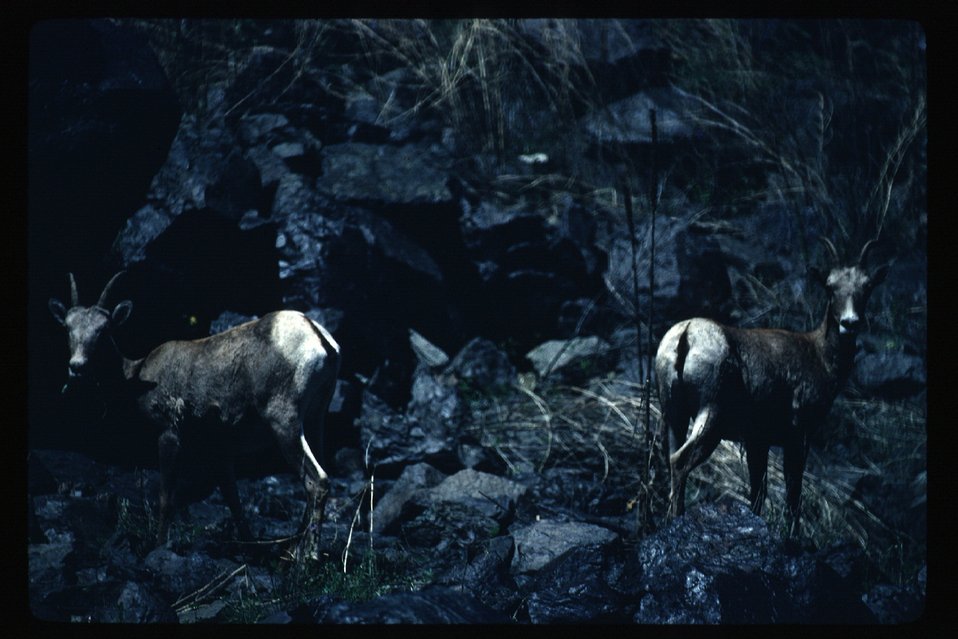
Bighorn on Snake River Wildlife USRD Upper Snake River District